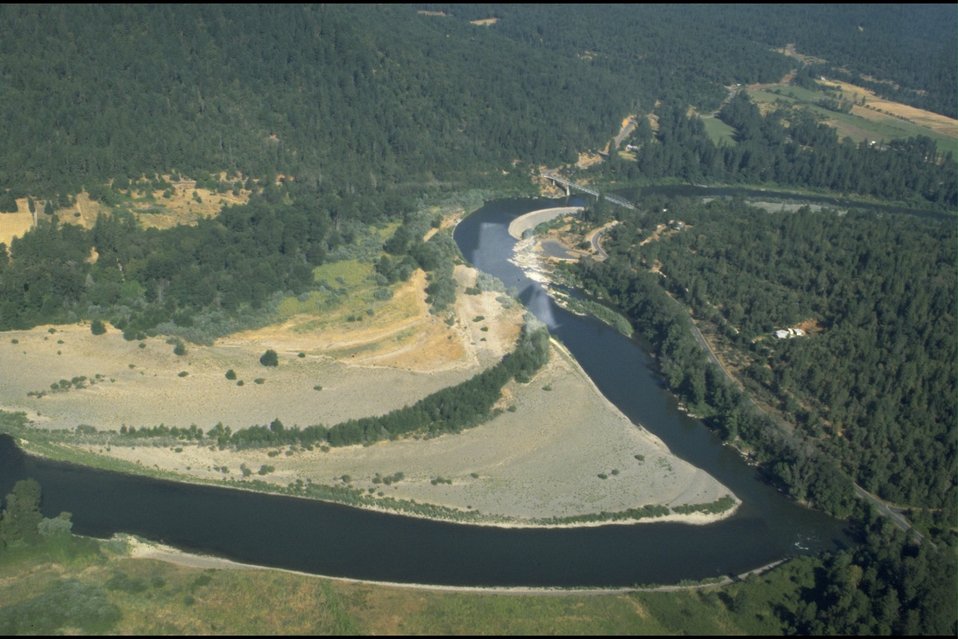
Rogue River - Highway Hole and Robertson Bridge, aerial photo.